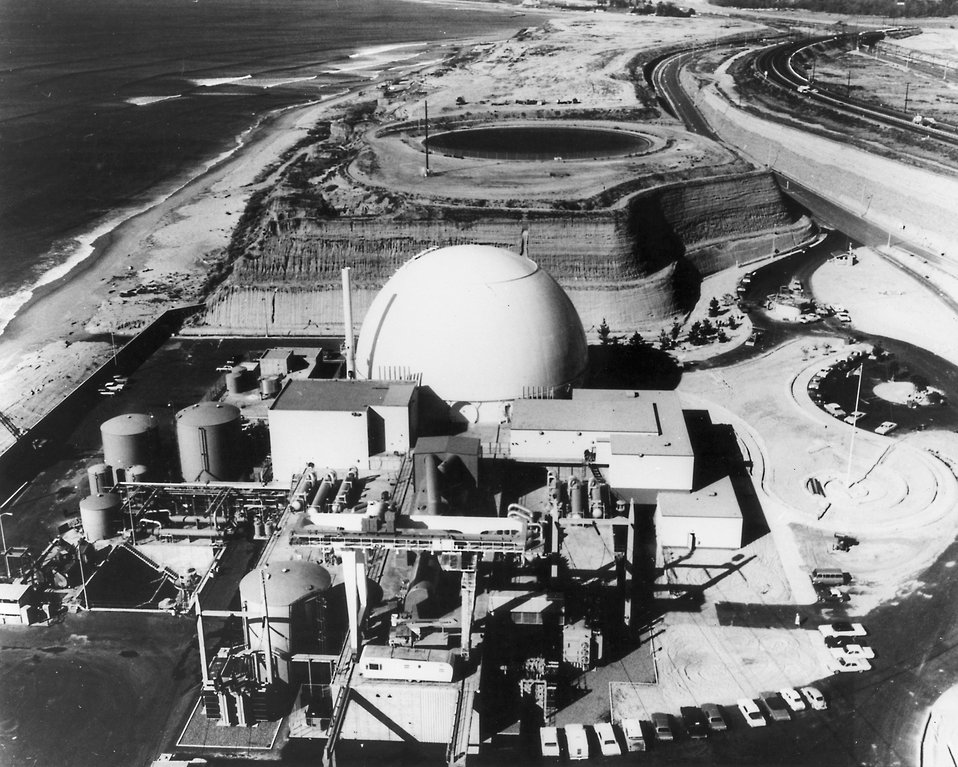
Like a giant beach ball, the huge nuclear containment sphere forms a distinctive center-piece for the San Onofre Nuclear Generating Station in this aerial view. Circa 1968.